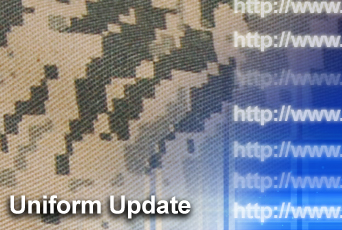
Airman's Roll Call: Addressing uniform updates

The newest Airman's Roll Call focuses on updates to the Airman Battle Uniform and physical training unform.